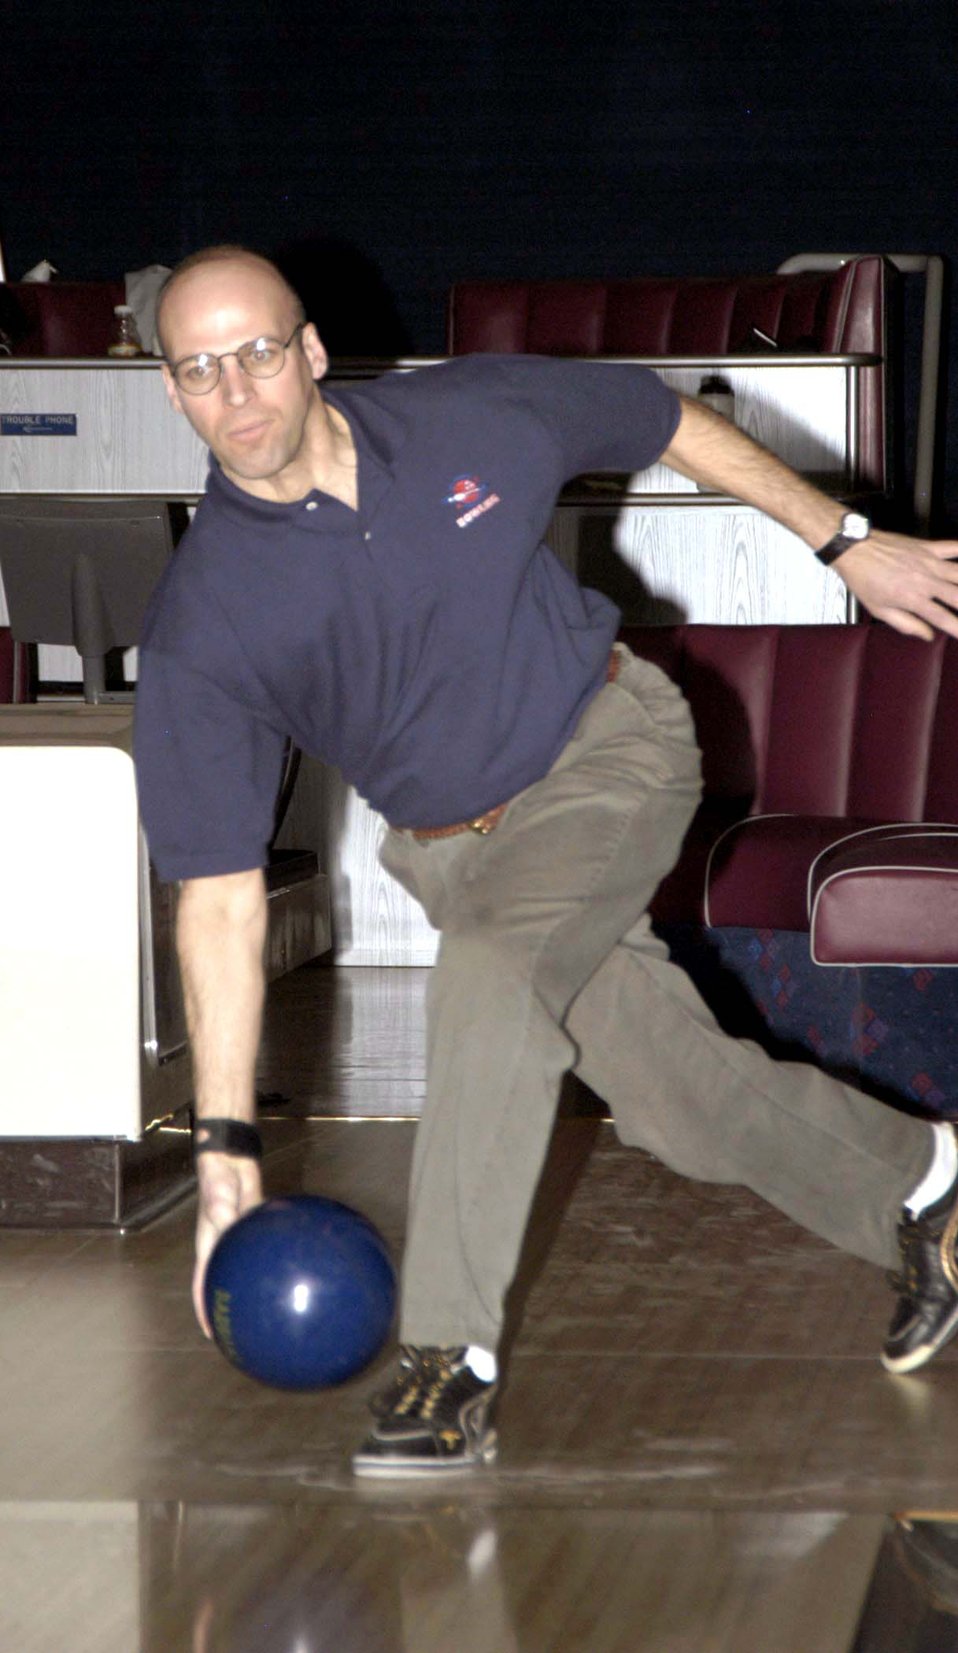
2006 Male Athlete of the Year

Master Sgt. Martin Bedford is the Air Force 2006 Male Athlete of the Year. When not bowling, Sergeant Bedford is a special purpose vehicle and equipment mechanic at Kunsan Air Base, Korea.